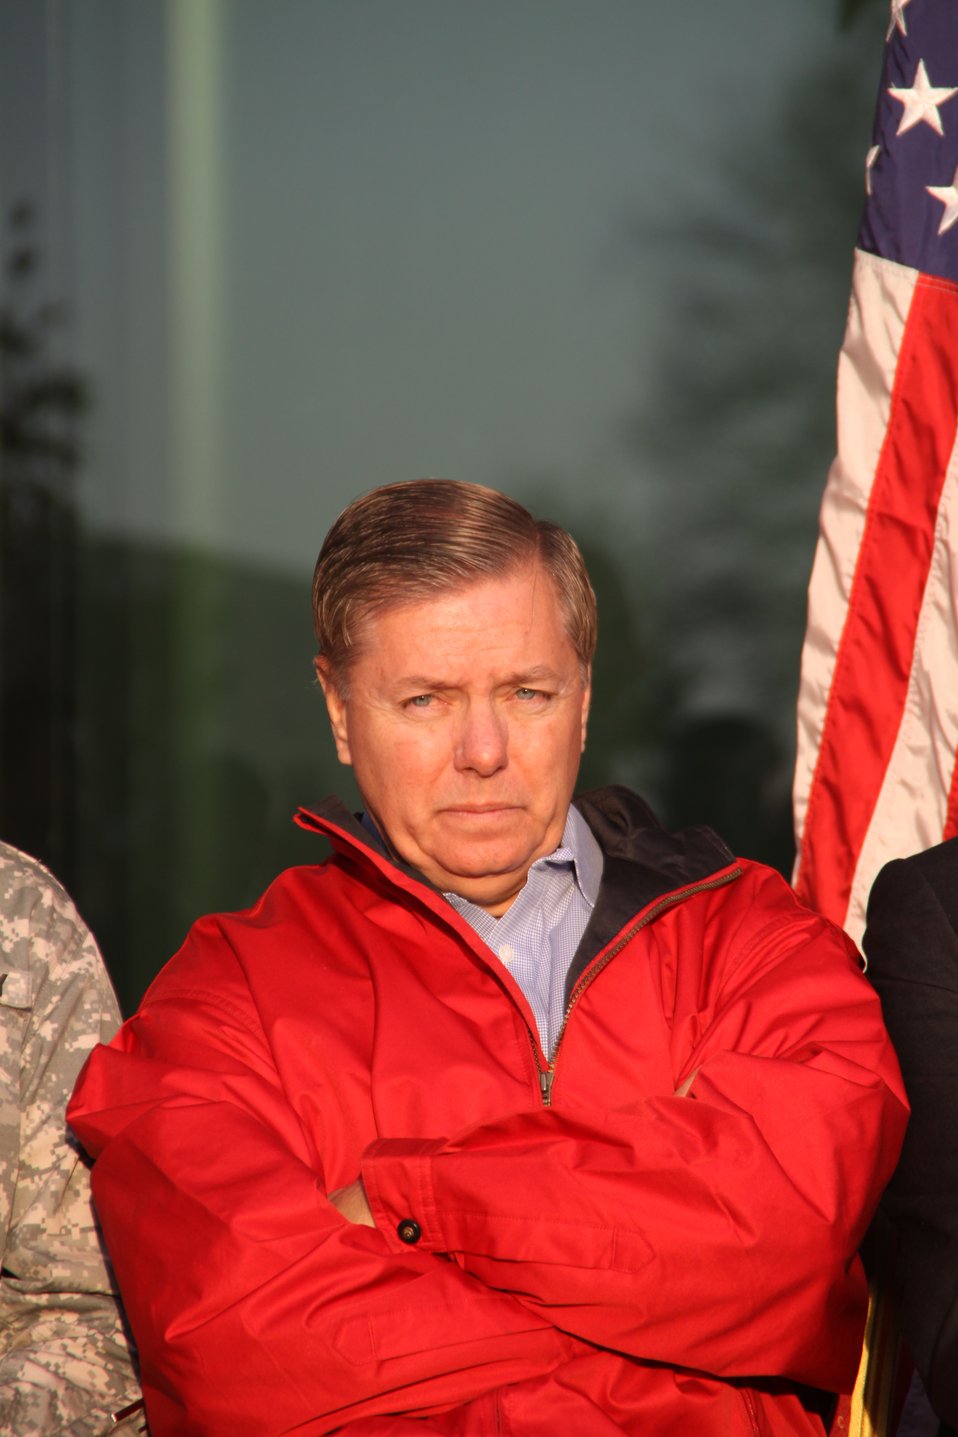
Senator Graham